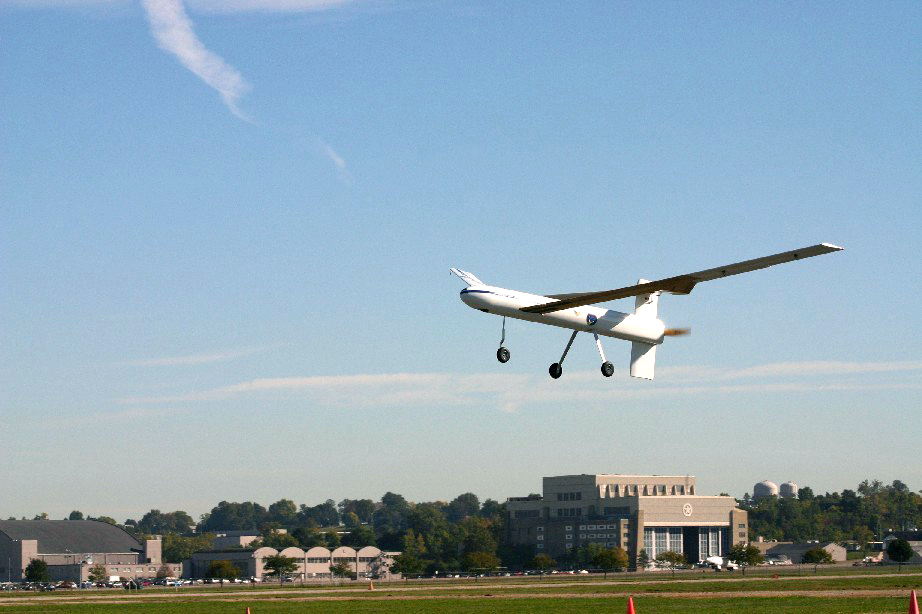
Research lab experts test joined wing demonstrator

WRIGHT-PATTERSON AIR FORCE BASE, Ohio -- The first flight of the Joined-Wing Technology Demonstrator took place here Sept. 22. The effort is supporting the SensorCraft project, a future intelligence, surveillance and reconnaissance design Air Force Research Laboratory experts are developing.